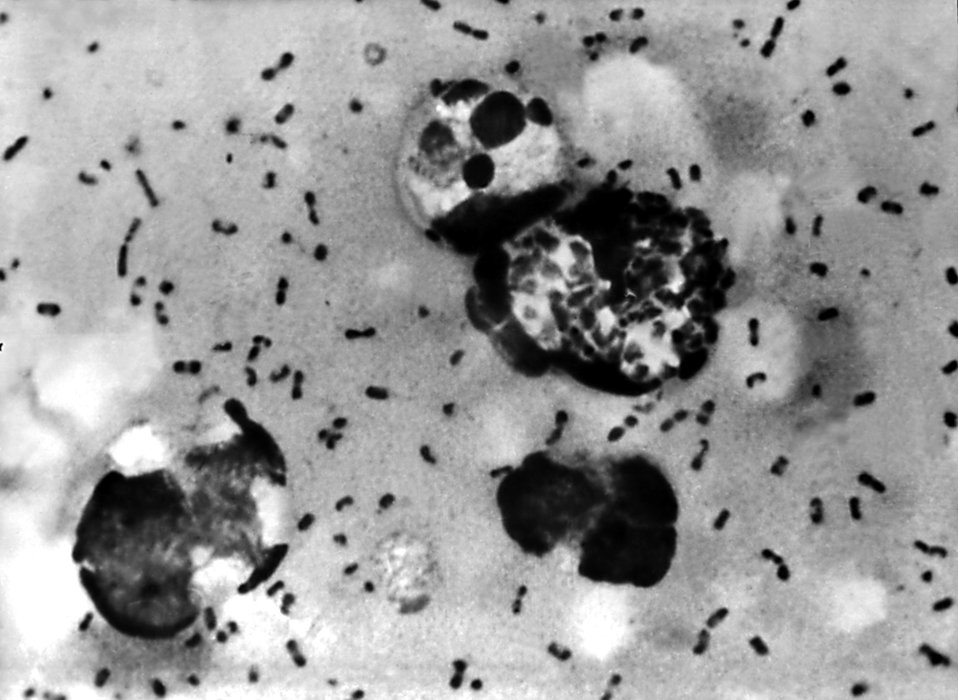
Bubonic Plague smear demonstrating the presence of Yersinia pestis bacteria.